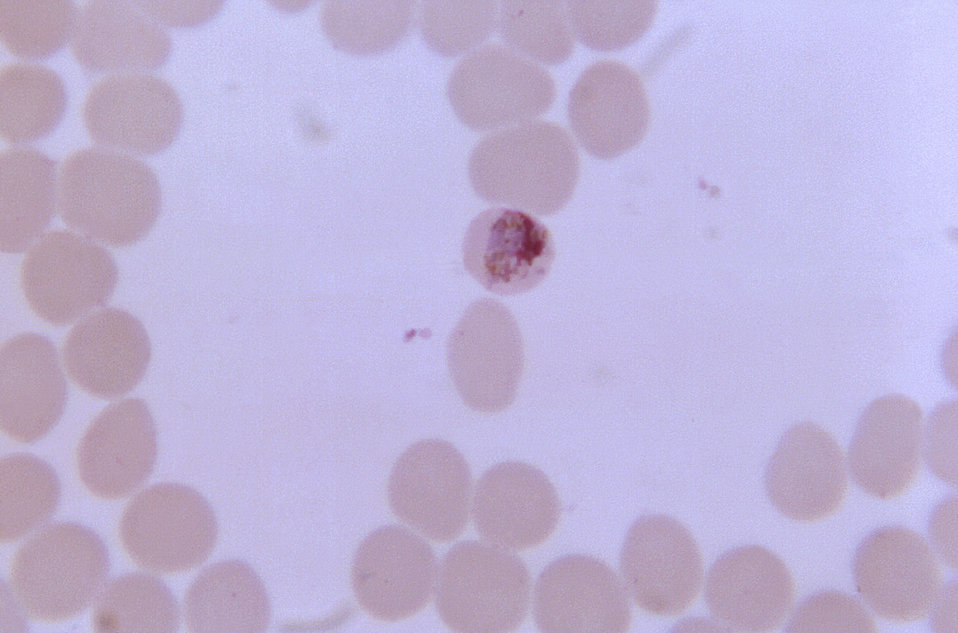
This thin film blood smear micrograph depicts an older, growing Plasmodium malariae trophozoite.